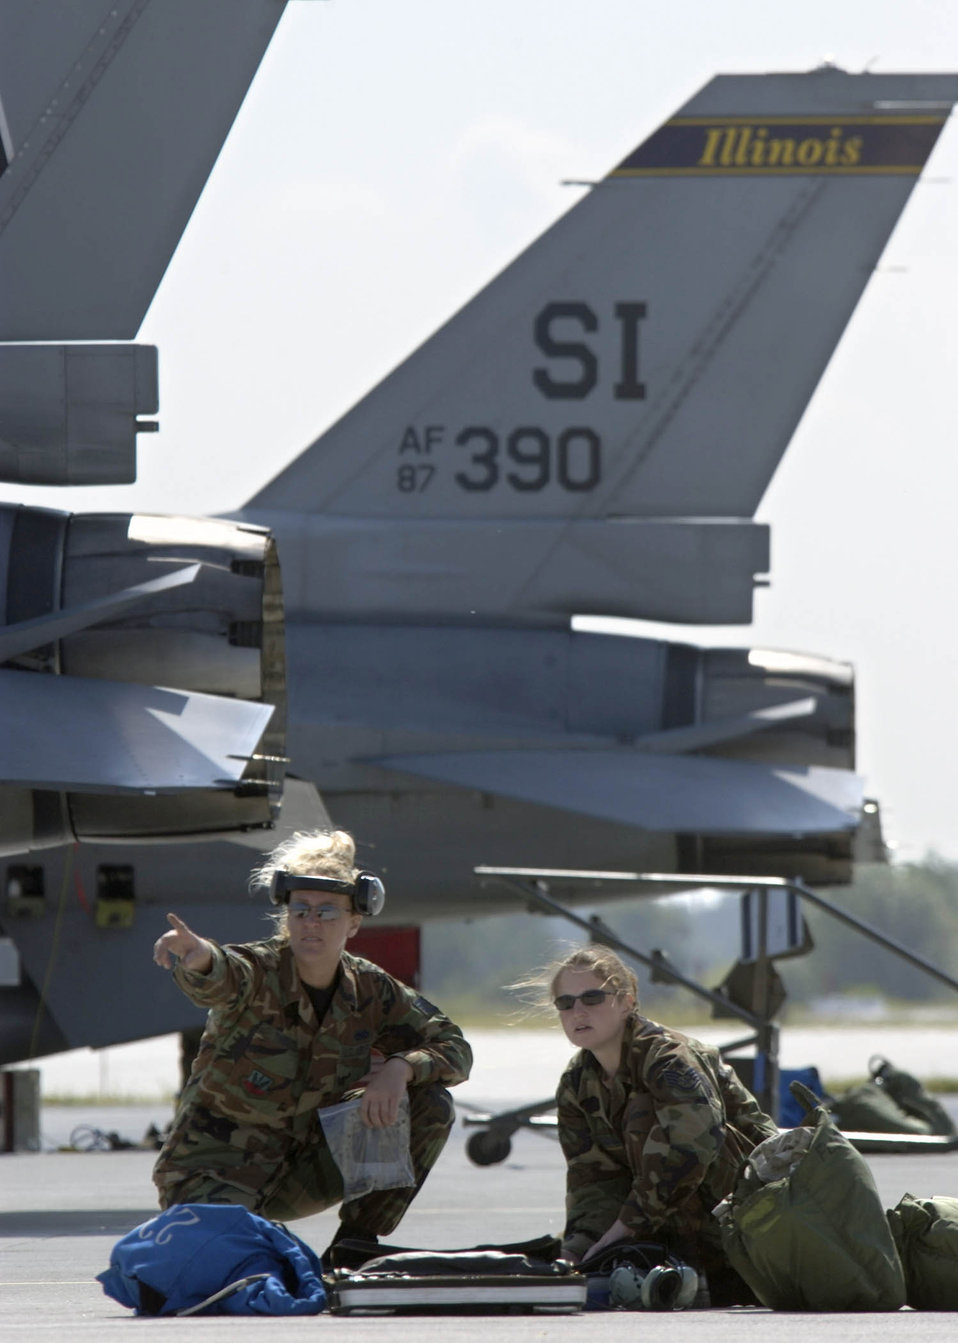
Guardsmen familiarize Polish airmen with F-16

POZNAN, Poland -- Staff Sgt. Valentina Thoele (left) discusses F-16 Fighting Falcon operations with Staff Sgt. Loni Gotschall here. The Airmen are from the Illinois Air National Guard's 183rd Fighter Wing, and they are familiarizing Polish airmen with the F-16 during the U.S. European Command exercise Sentry White Falcon 2005 through June 17. In 2006, the Polish air force will start receiving their own F-16s that will begin replacing their Soviet-made MiG fighters as the country modernizes its military to NATO standards.